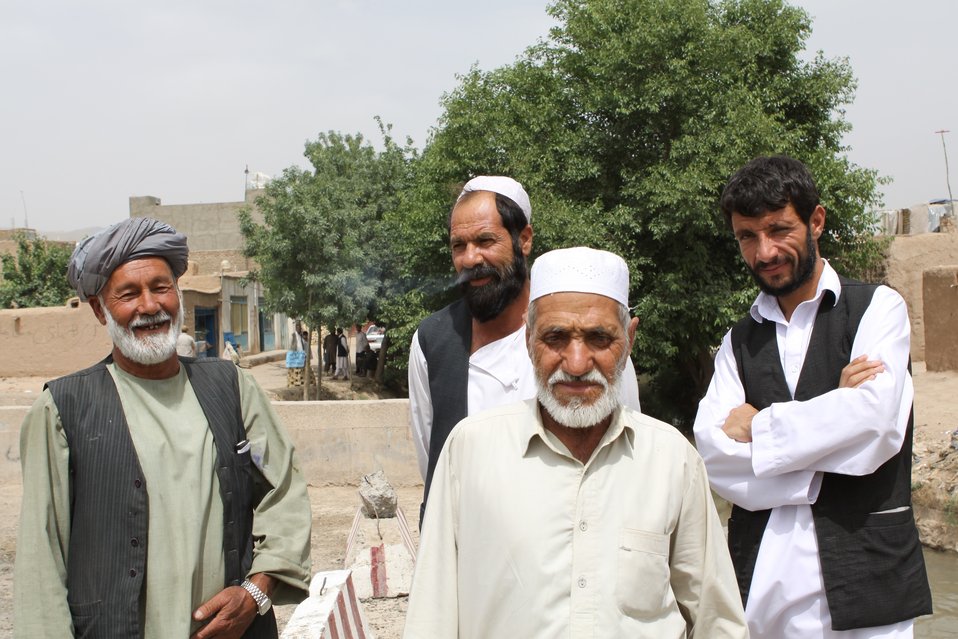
100525 Hirat Marble Conference 621